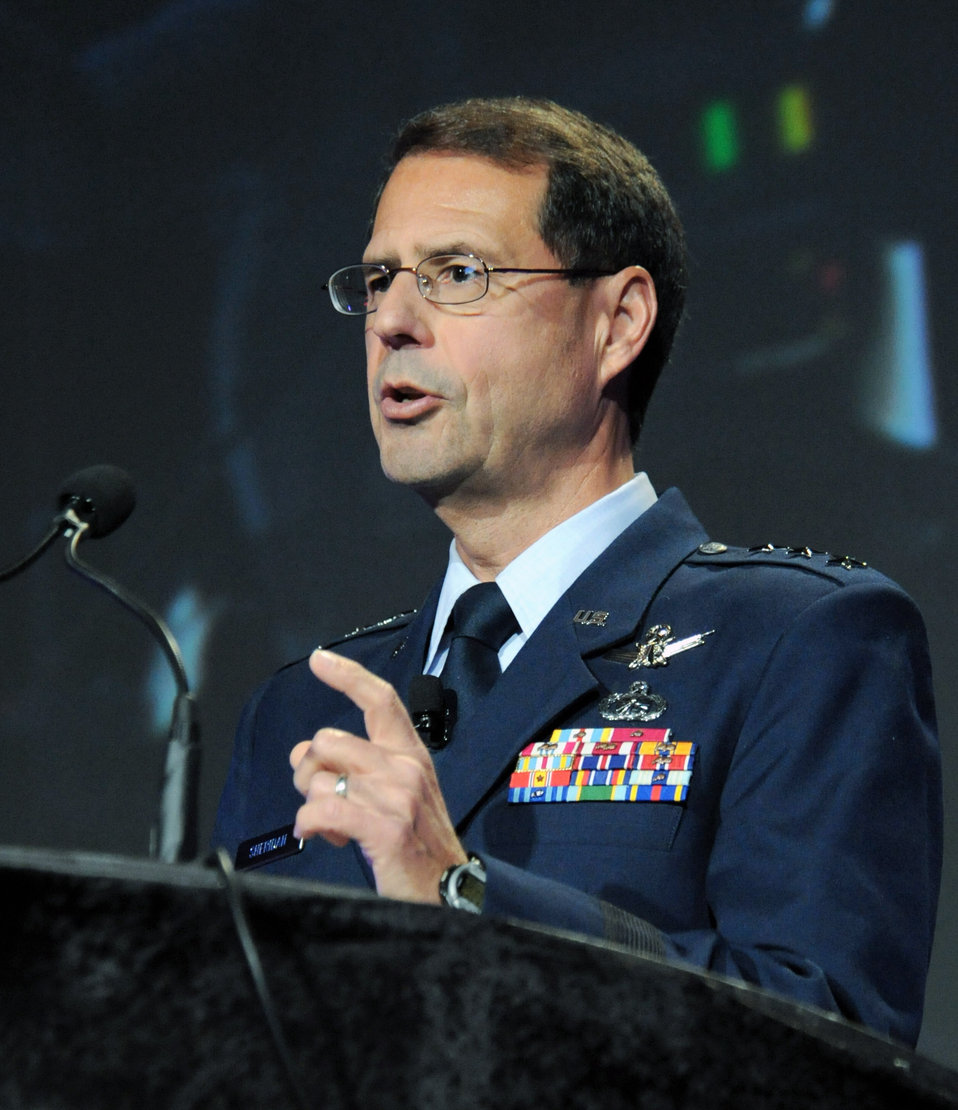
Generals discuss future issues at National Space Symposium

Lt. Gen. John T.